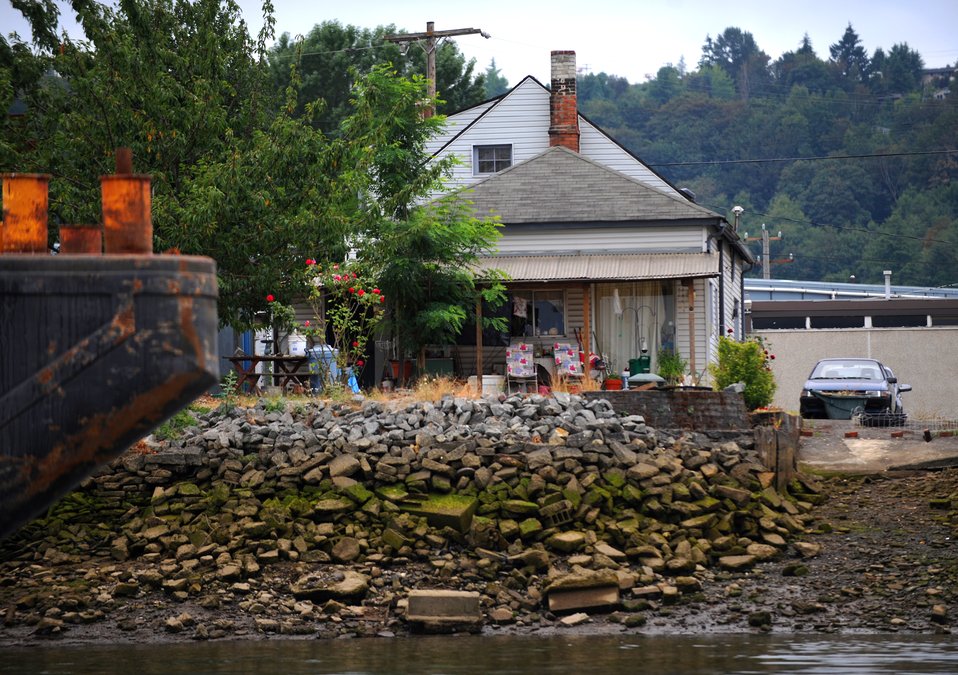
South Park Home

The lower reach of the Duwamish River is located south of downtown Seattle, and is flanked by industrial corridors as well as the South Park and Georgetown neighborhoods. Educating local residents about proper use of pesticides and other chemicals is important to help control ongoing contamination in the river from stormwater runoff. Visit www.epa.gov/region10/duwamish to learn more about EPA's efforts to clean up and restore the lower Duwamish River.